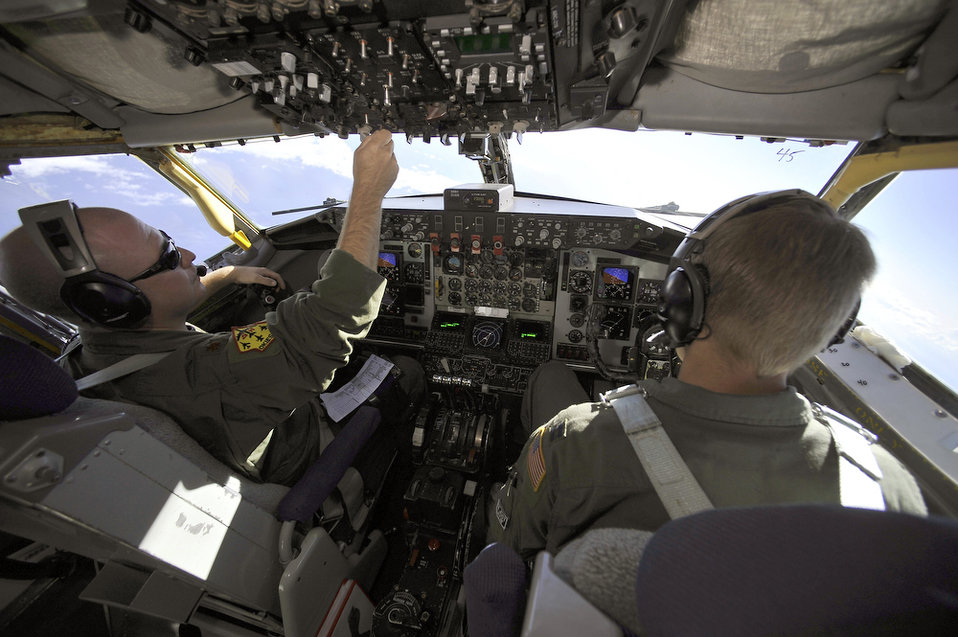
Refuelers keep aircraft flying during exercise

Maj. Benjamin Evans (left) and Capt. Matt Biggs, KC-135 Stratotanker pilots with the 507th Air Refueling Wing at Tinker Air Force Base, Okla., set their controls July 20, 2010, in preparation to refuel aircraft participating in the Rim of the Pacific exercise. RIMPAC, the world's largest maritime exercise, is a biennial event which stresses interoperability among the 14 nations participating in the exercise. The tanker is staging out of Joint Base Pearl Harbor-Hickam, Hawaii.